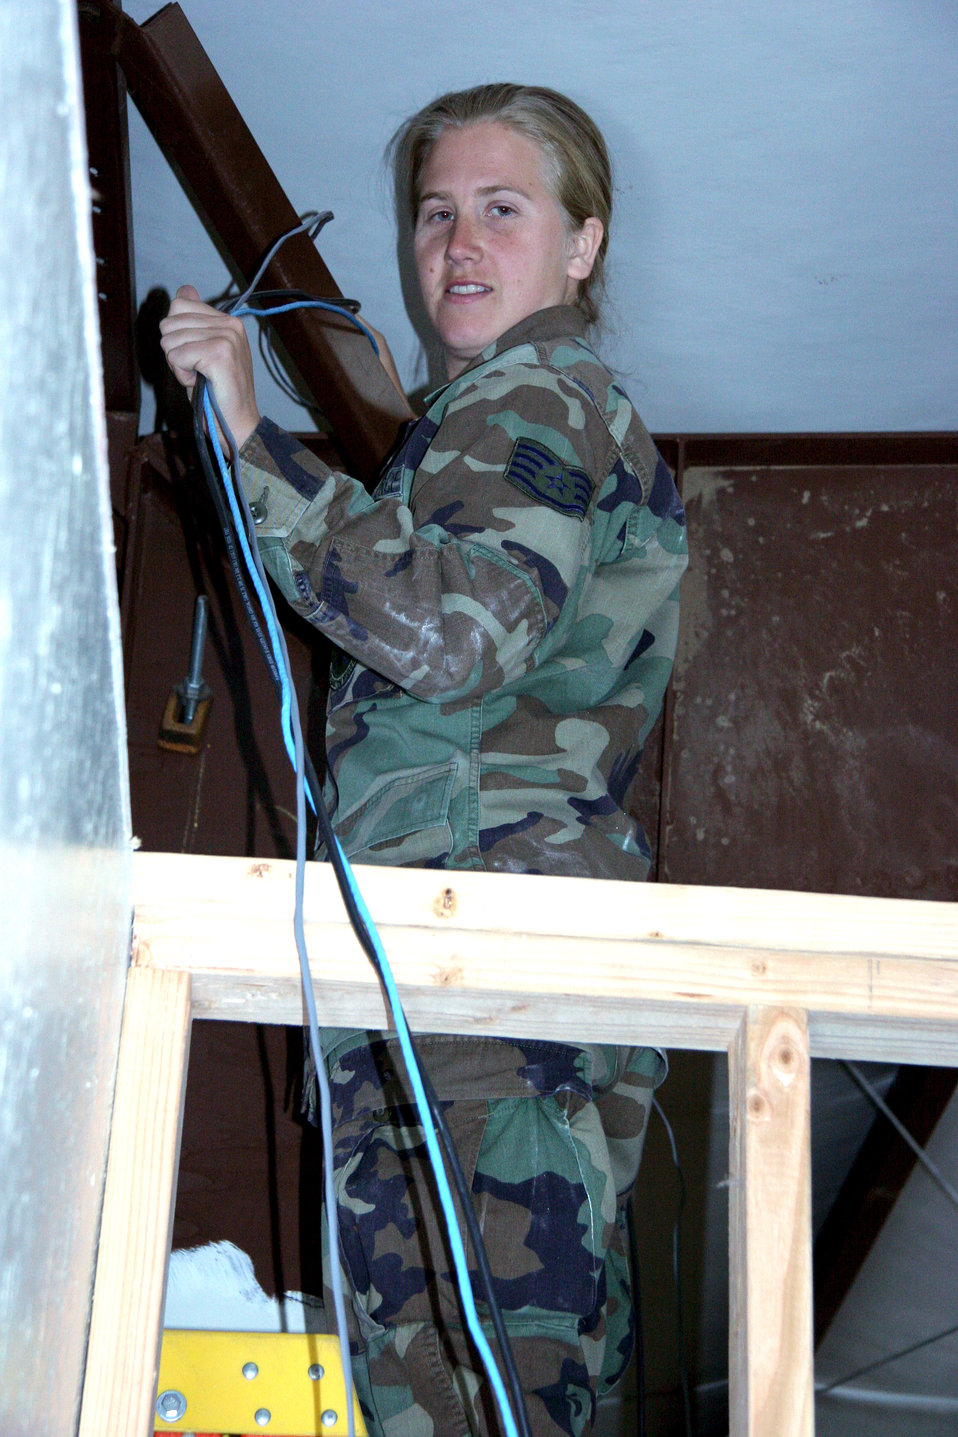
939 Washoe IRT exercise

Staff Sgt. Karla Cochran pulls hundreds of feet of phone, cable, internet and electrical wires to remodel an old store that will become a wellness center for the Washoe American-Indian Tribe as part of an Air Force Reserve Command innovative readiness training program near Carson City, Nev. May 16, 2006. She is an electrician with the 939th Civil Engineer Squadron.